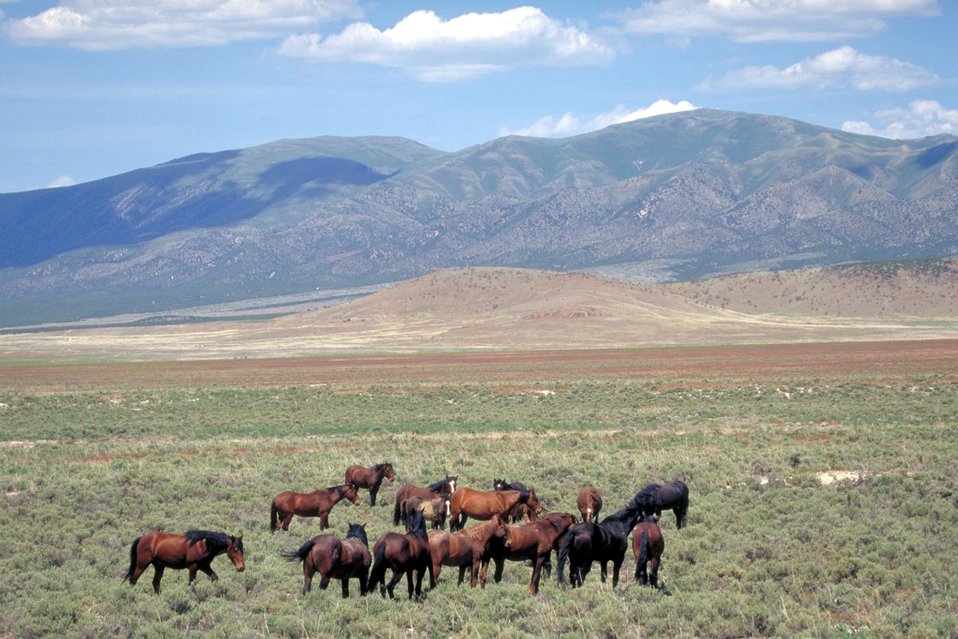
Onaqui Herd near Dugway, Utah.